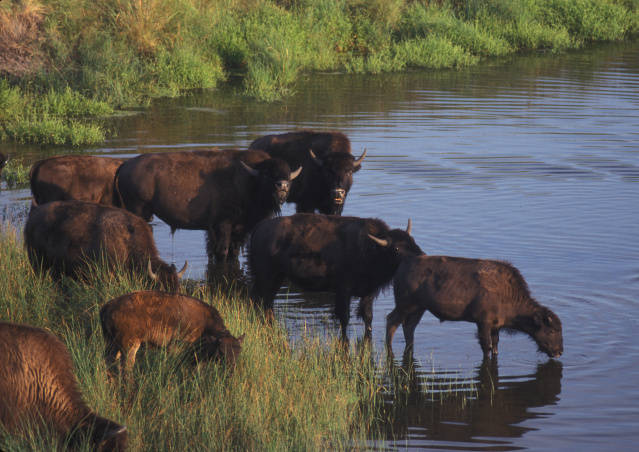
bison herd

Fort Niobrara National Wildlife Refuge, NE